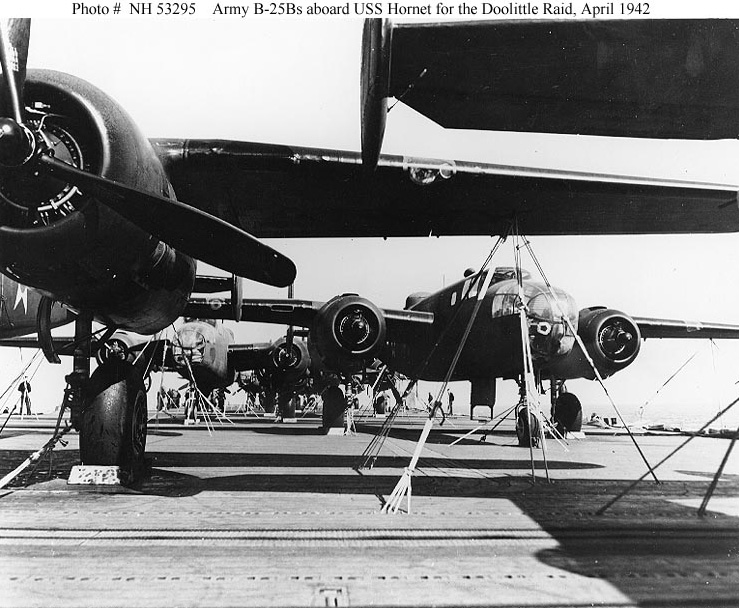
Doolittle Raid

Some of the mission's B-25B bombers parked on the flight deck of USS Hornet (CV-8). Note use of the flight deck tie-down strips to secure the aircraft.